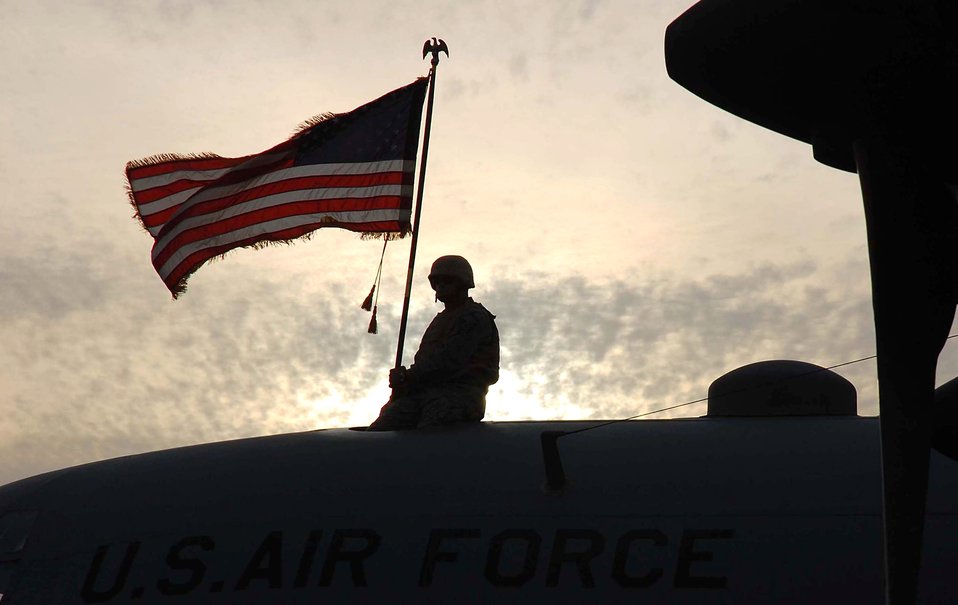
44-year old C-130 flies final combat mission, ends service

Master Sgt. Roger Richardson holds an American flag atop a C-130 Hercules, tail number 63-7865, Nov. 13 in Southwest Asia. The aircraft from Ramstein Air Base, Germany, had just flown its last combat mission and will be flown to Davis-Monthan Air Force Base, Ariz., where it will be laid to rest at the